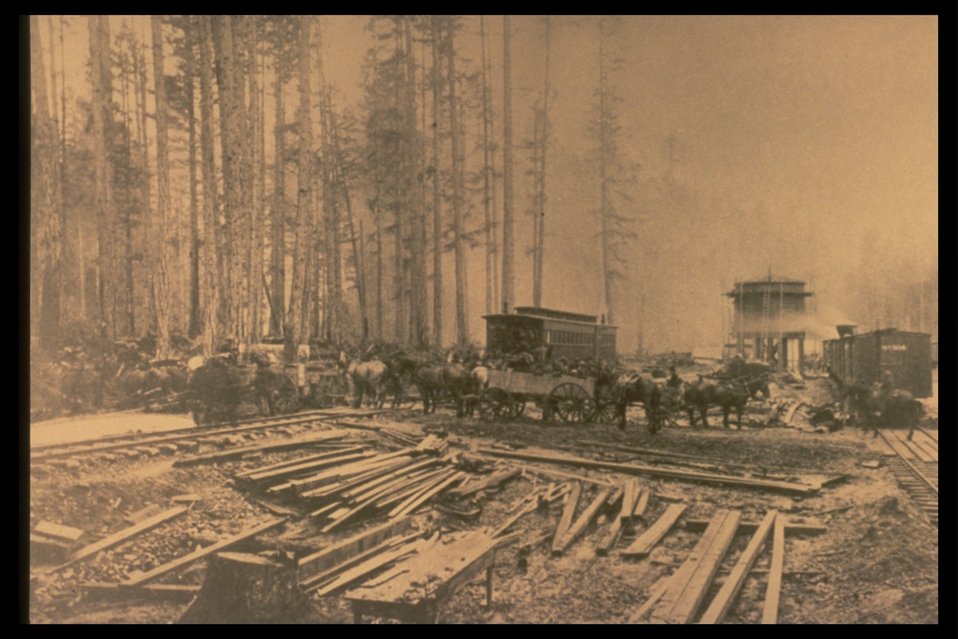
Black and white photo of a rail yarding site with a train and workers.